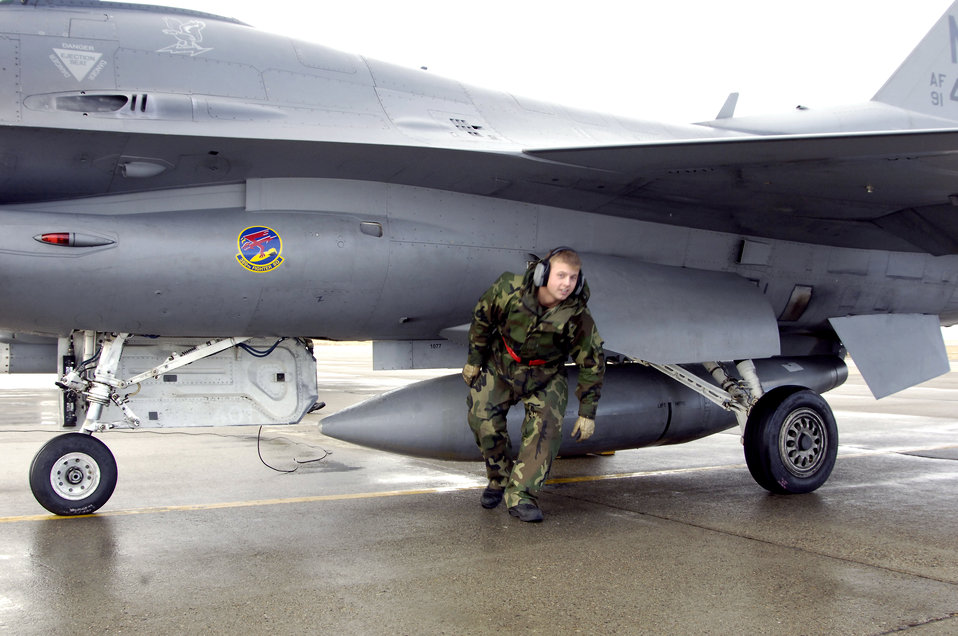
Maintainers' mission

MOUNTAIN HOME AIR FORCE BASE, Idaho (AFPN) -- Airman 1st Class Brandon Simmons, 389th Aircraft Maintenance Unit, checks an F-16 Fighting Falcon before its departure.